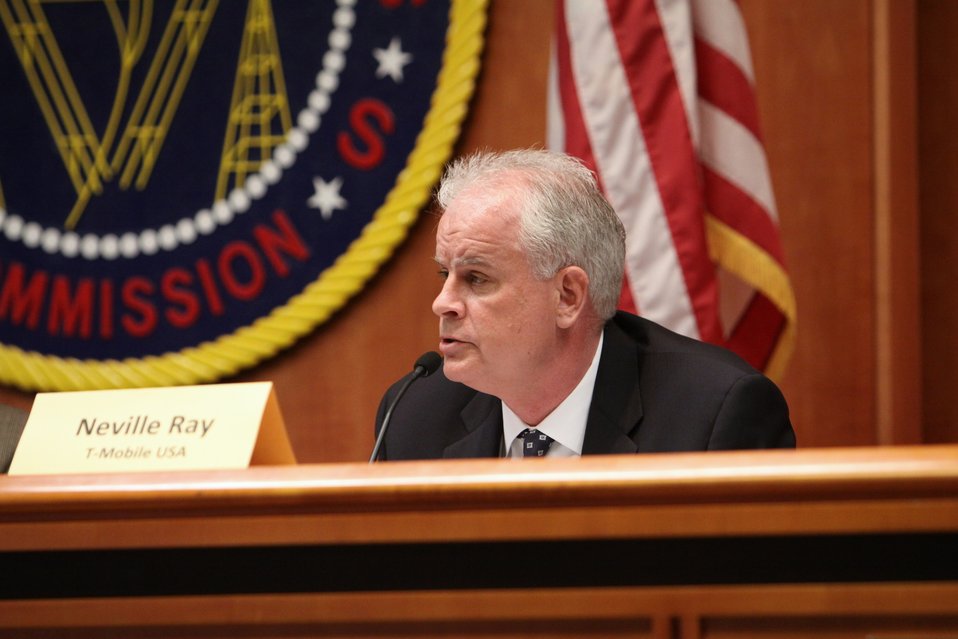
Neville Ray, Chief Network Officer, T-Mobile USA participates in Economic Imperative for New Broadband Spectrum Panel